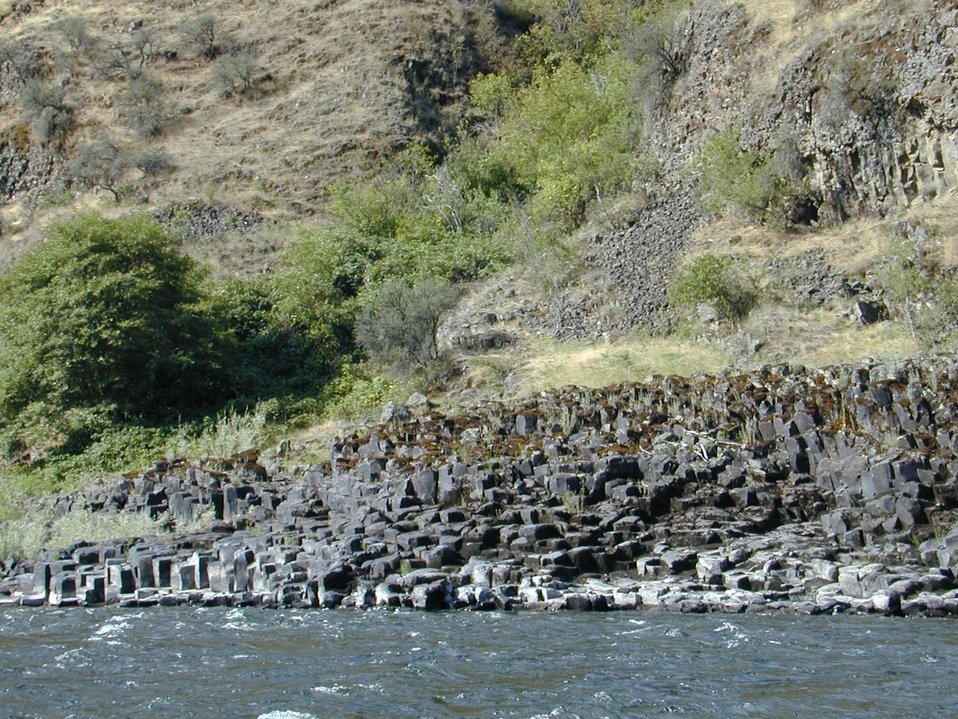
Scenic shot of Lower Salmon River Cottonwood Field Office UCSC Upper Columbia Salmon Clearwater District